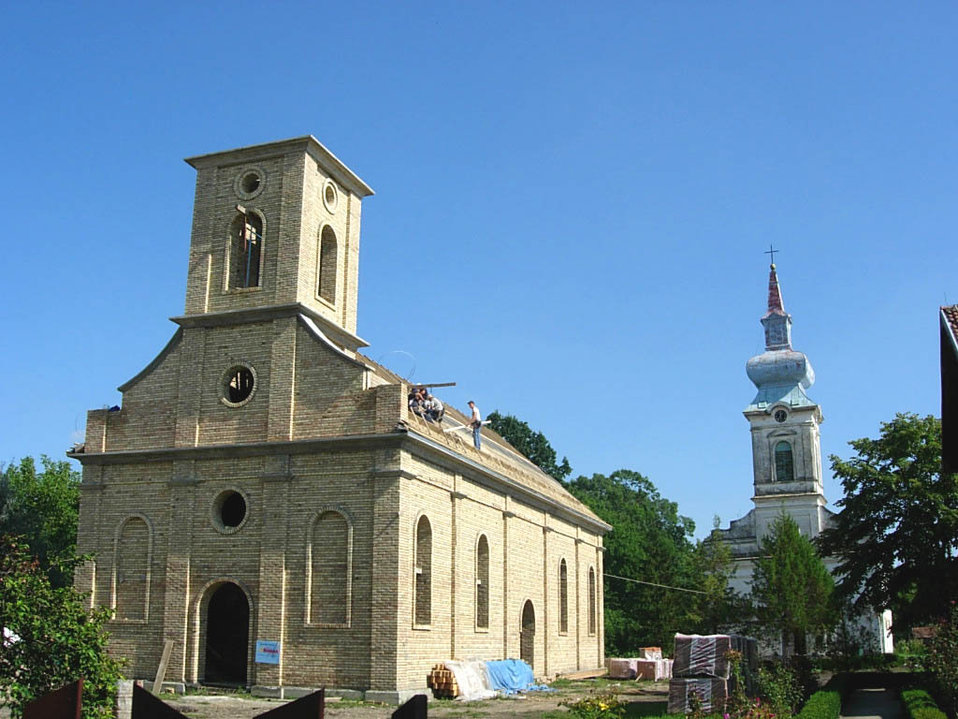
Hajdučica, Slovak Evangelical churches